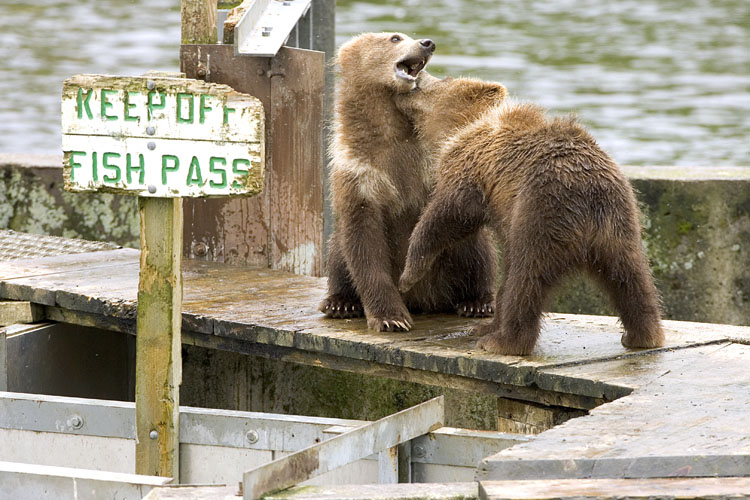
KOD Hildebrand (48)

Kodiak National Wildlife Refuge- Wildlife